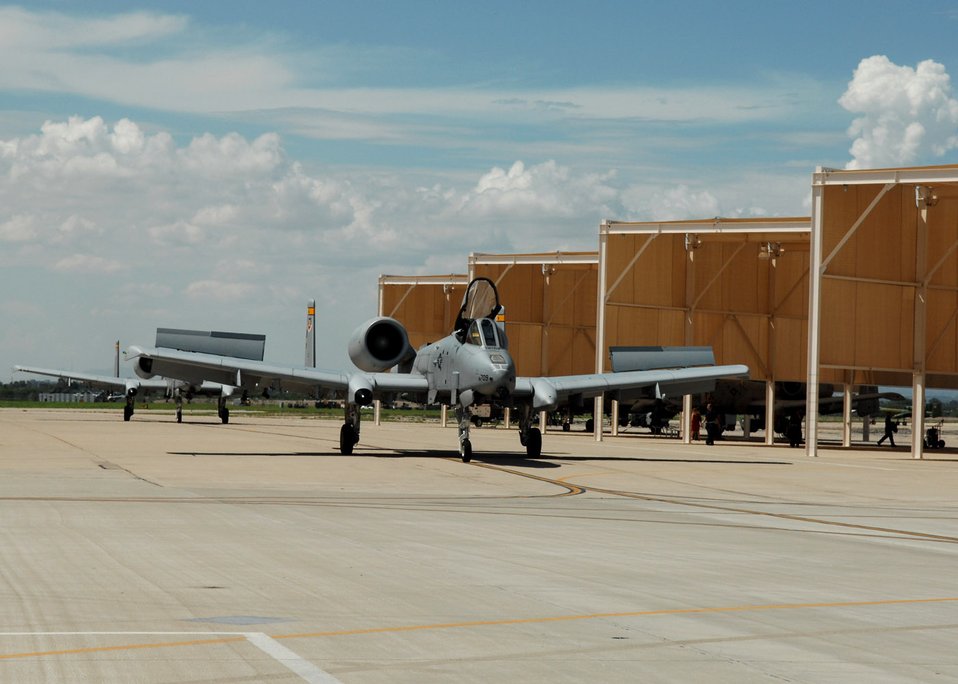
First class qualification

Second Lieutenant Robert Arena taxis down the runway in his A-10 Thunderbolt II, after completing the first A-10C pilot initial qualification course Aug. 2 at Davis-Monthan Air Force Base, Ariz. During the seven-month-long course, the training focused on the new A-10C platform which replaced the A-10A. The pilots also learned the basics of being attack pilot wingmen, which included flying in formation to provide mutual support, communicate with radios and kill the assigned target on the first attempt. Lieutenant Arena is an A-10 pilot with the 357th Fighter Squadron.